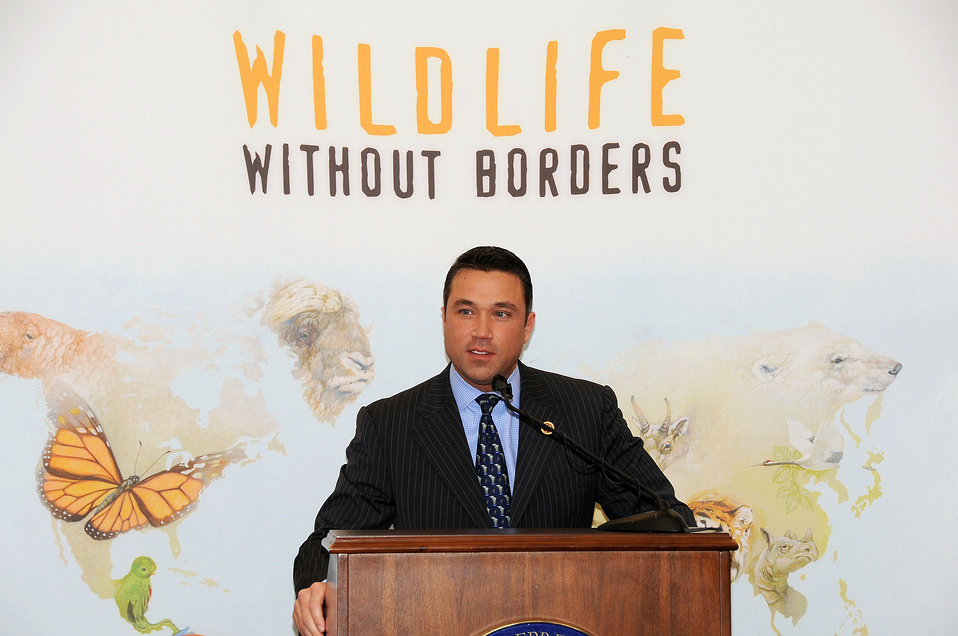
Save Vanishing Species on Capitol Hill

Michael Grimm- NY Congress